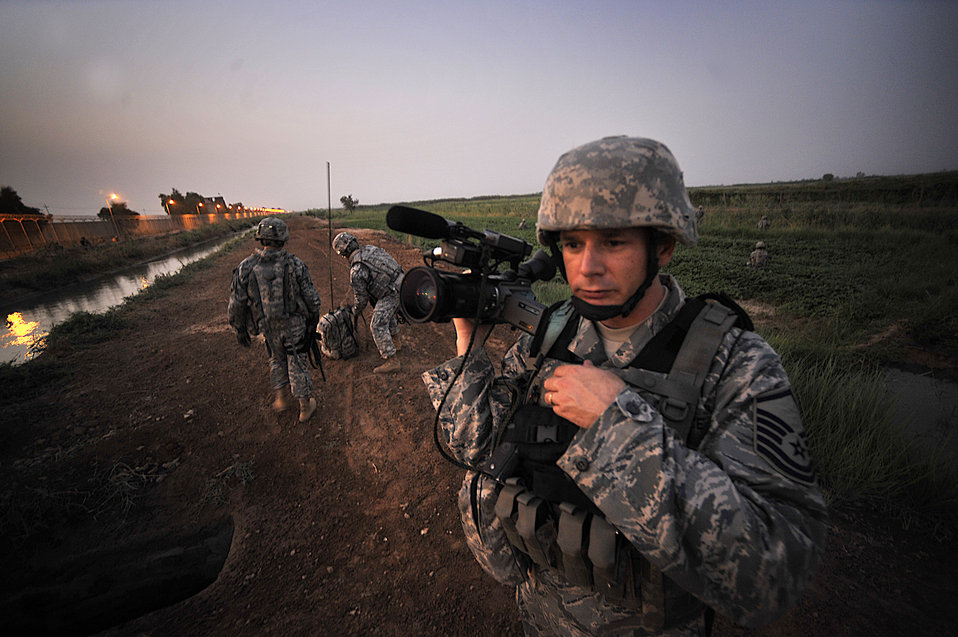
Getting it on record

Master Sgt. James Monk takes a break while filming a joint patrol Sept. 11 at Joint Base Balad, Iraq. The operation introduced security forces Airmen to Balad's outer perimeter, an area they will soon assume from the Army. Sergeant Monk is assigned to 1st Combat Camera Squadron.